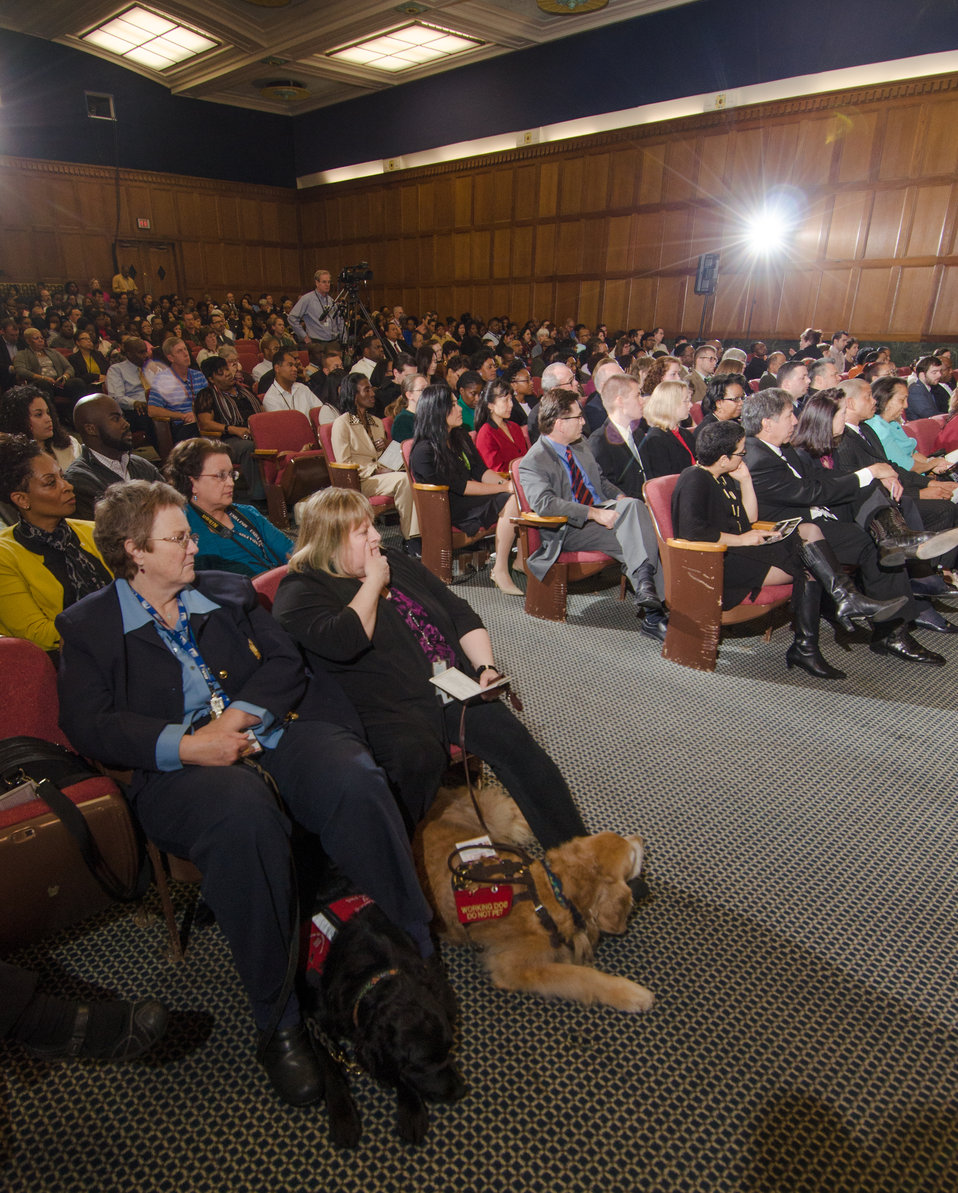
The audience listen to Agriculture Assistant Secretary Civil Rights Dr. Joe Leonard speak during the Dr. Martin Luther King, Jr. National Service Day Drum Major for Service Award ceremony, in Washington, D.C., on Tuesday, Jan. 15, 2013.